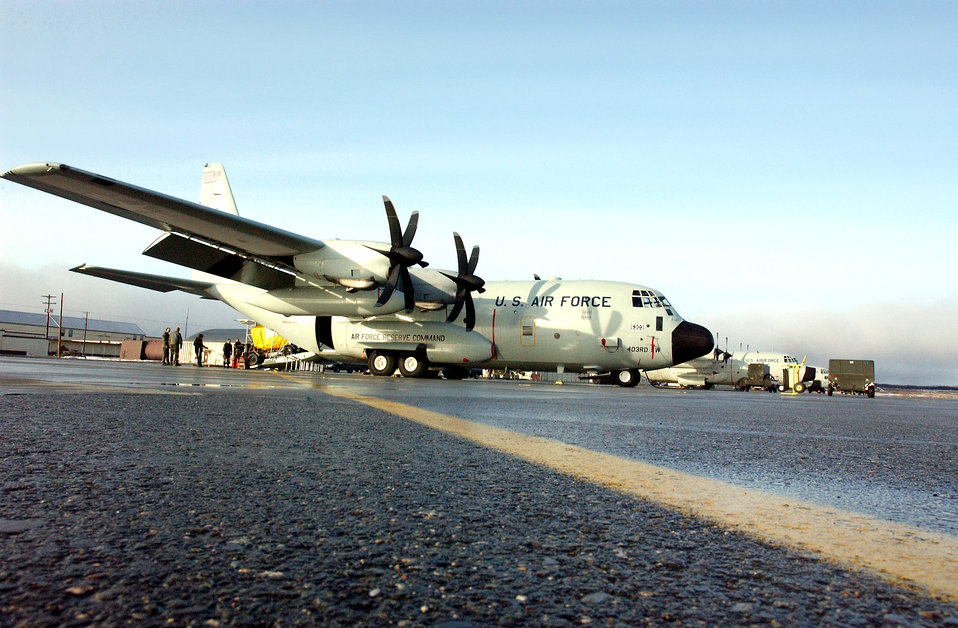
Hurricane Hunters ready to take on 2006 storm season

The